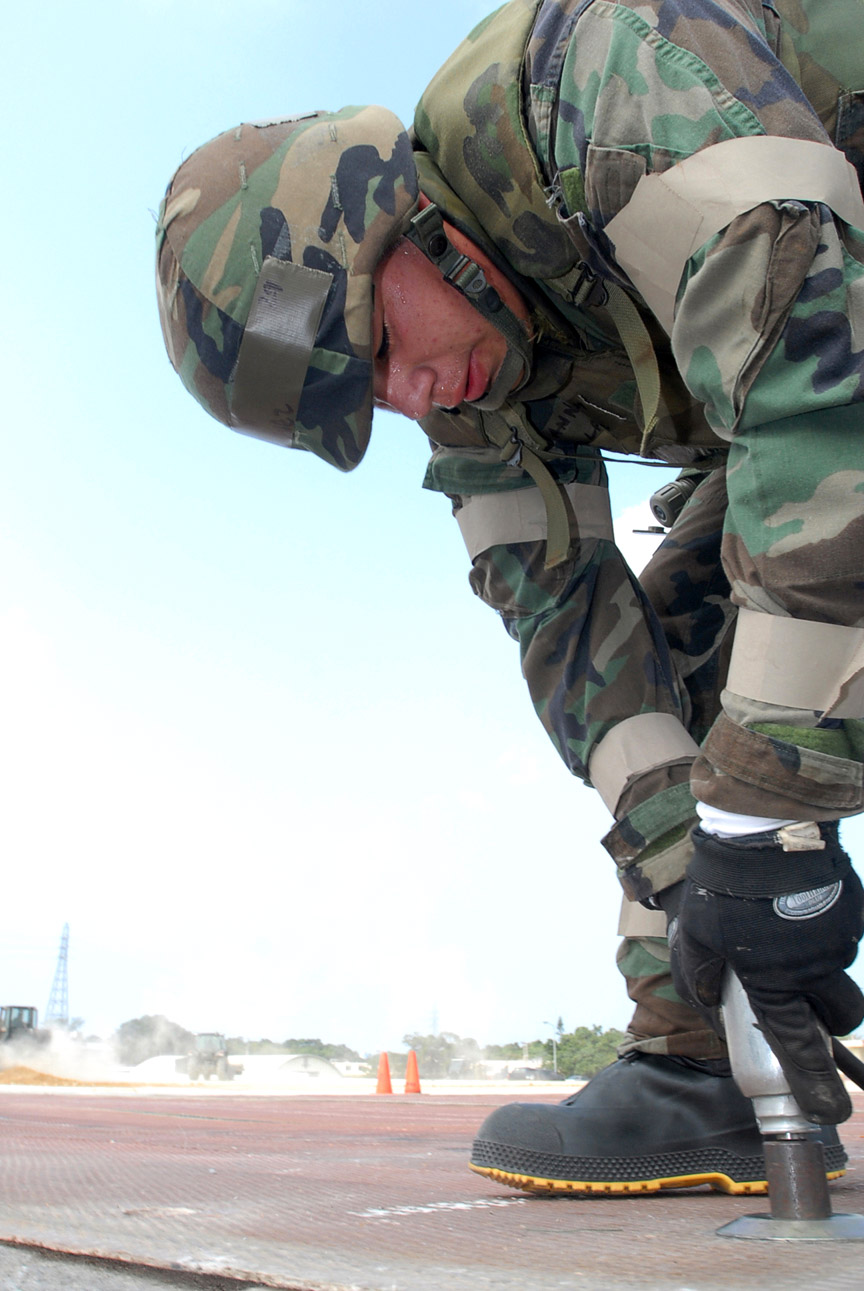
Airmen practice runway repair, RAAF airmen observe, take ideas home

Airman Frank Lainez, 36th Civil Engineer Squadron, uses an impact drill on the bolts of a folding fiberglass matt to hold it into place at Kadena Air Base, Japan, Nov. 16. Approximately 110 personnel, most from Andersen Air Force Base, Guam, attended the Det. 1, 554th Rapid Engineer Deployable Heavy Operational Repair Squadron Engineer Silver Flag exercise here.